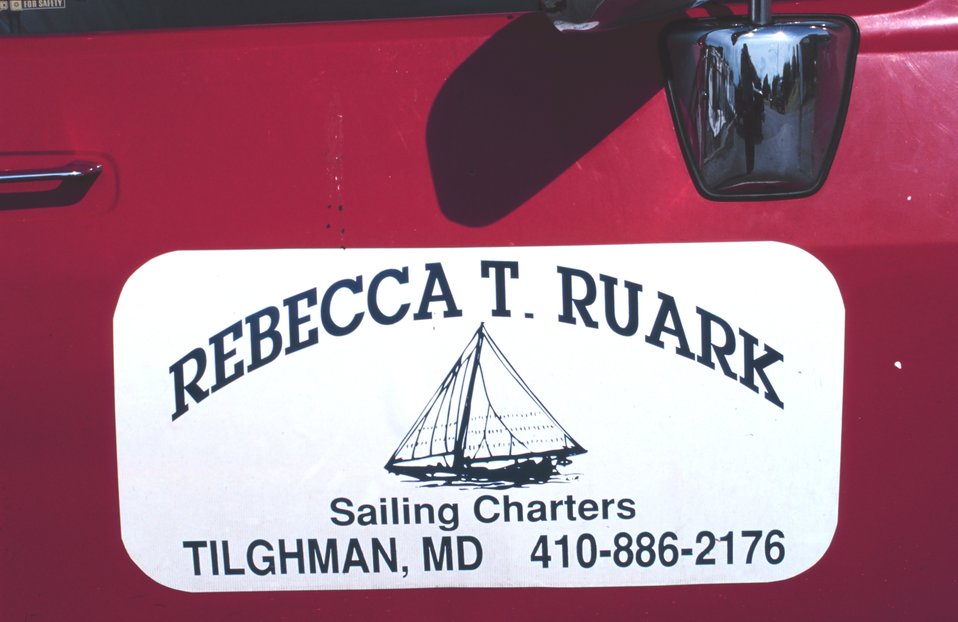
Advertising tourist trips on a sailing oyster dredger.